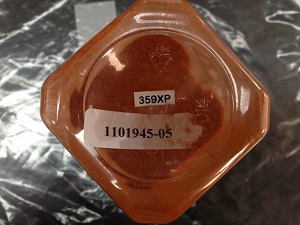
RECALLED – Crushed Chili Powder

May 13, 2014 – Product Recall – US Trading Company Voluntary Recall of Crushed Chili Powder Because of Possible Health Risk.